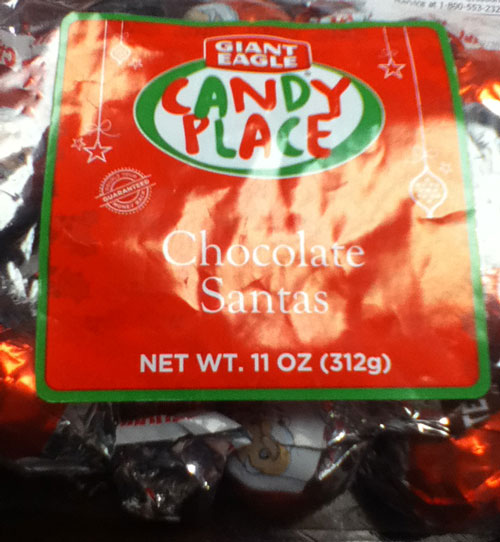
RECALLED – Candy Place Chocolate Santas

December 28, 2013 – Giant Eagle Issues Allergy Alert On Undeclared Peanut Allergen In
Candy Place Chocolate Santas.